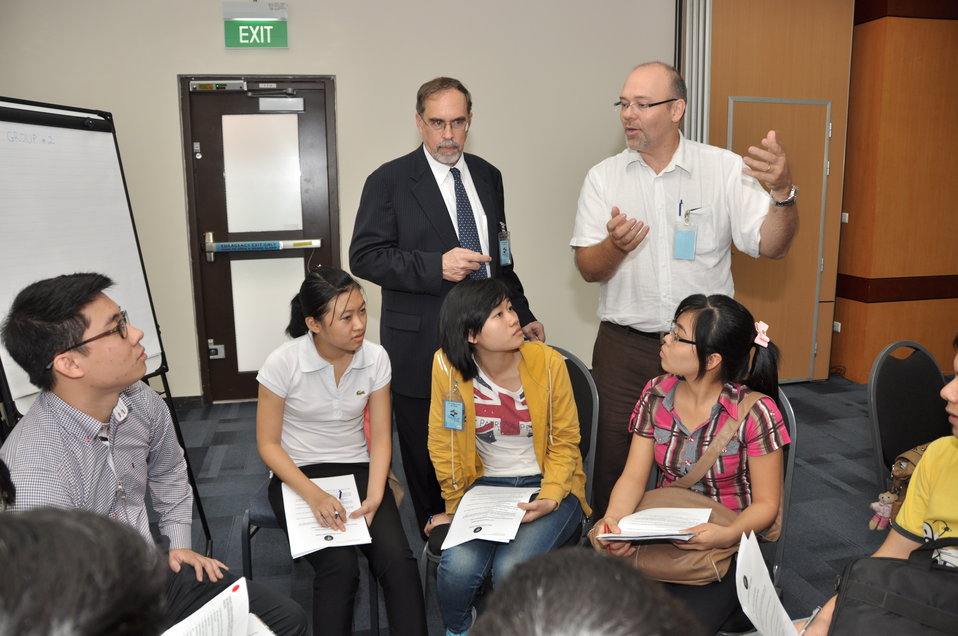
Vietnamese university students join the Business Plan Mashup exercise

Photo: @USAIDVietnam, November 16, 2012